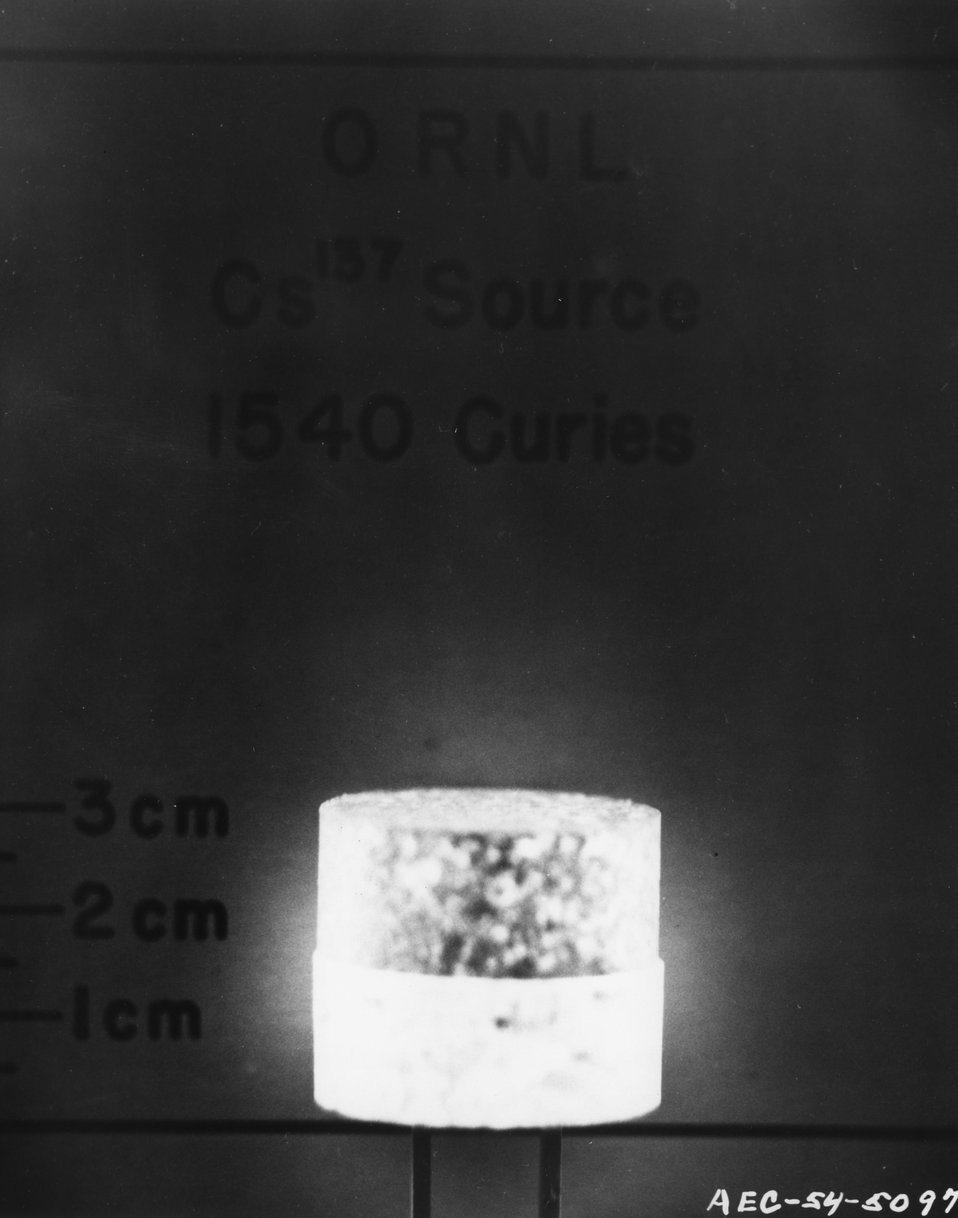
An actual photograph at the oak Ridge National Laboratory for use in cancer treatment. c. 1954